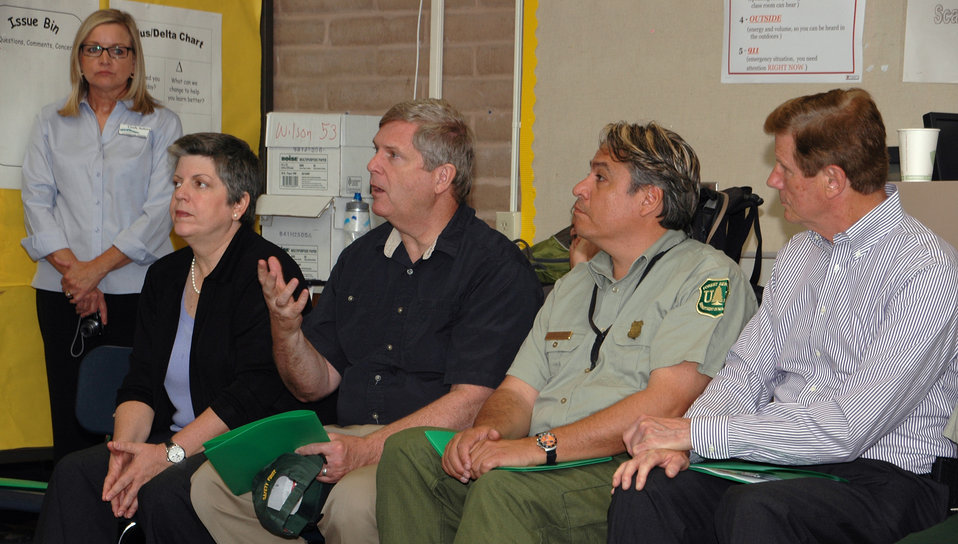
Homeland Security Secretary Janet Napolitano (left) listens as Agriculture Secretary Tom Vilsack asks a question during their visit to the Waldo Canyon Fire near Colorado Springs, CO on Tuesday, July 3, 2012.